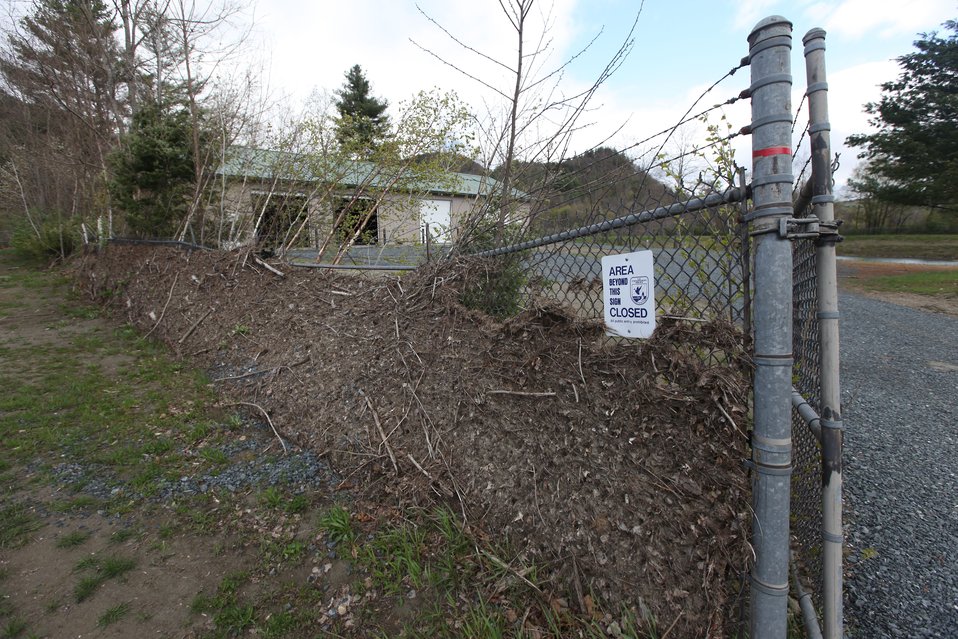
Evidence of flood levels on hatchery fence

U.S. Fish & Wildlife Service Director Dan Ashe visits the Northeast Region
for a tour of the White River National Fish Hatchery in Bethel, Vermont on
April 27, 2012. The hatchery was devastated by Tropical Storm Irene and
Dan Ashe had the chance to meet and thank the staff for their heroic work.
Director Ashe also visited restoration/flood response/fish passage project
sites in Rochester, Vermont and met with local officials and staff from the
White River Partnership.